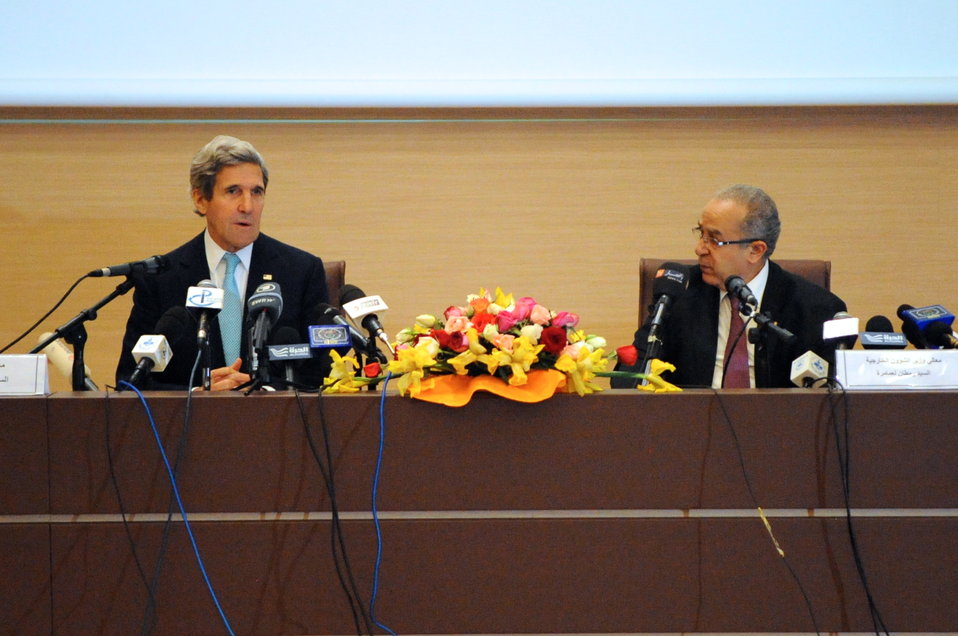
Secretary Kerry and Algerian Foreign Minister Open Strategic Dialogue Between Their Countries

U.S. Secretary of State John Kerry and Algerian Foreign Minister Ramtane Lamamra open a Strategic Dialogue between their two countries at the Ministry of Foreign Affairs in Algiers, Algeria on April 3, 2014.